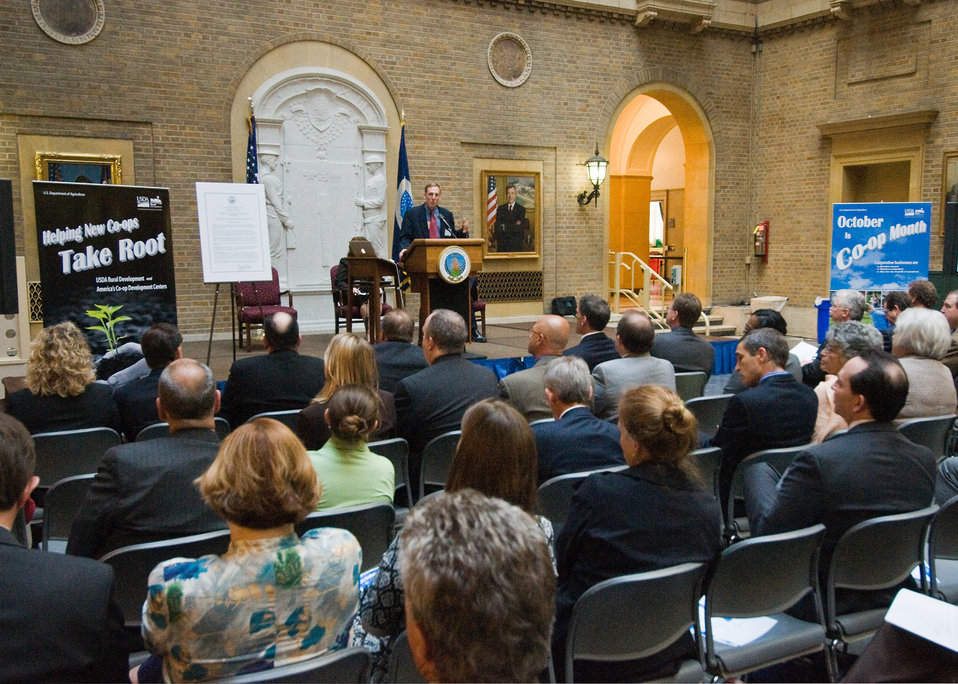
Dr. Brent Heuth, Director, University of Wisconsin Center for Cooperatives speaks of the demographics and economics of rural cooperatives and their importance to rural economies during the celebration of October as National Co-op Month at an event at the Department of Agriculture, Tuesday, October 5, 2010 in Washington, DC. USDA Photo 10di1517-26 by Bob Nichols.